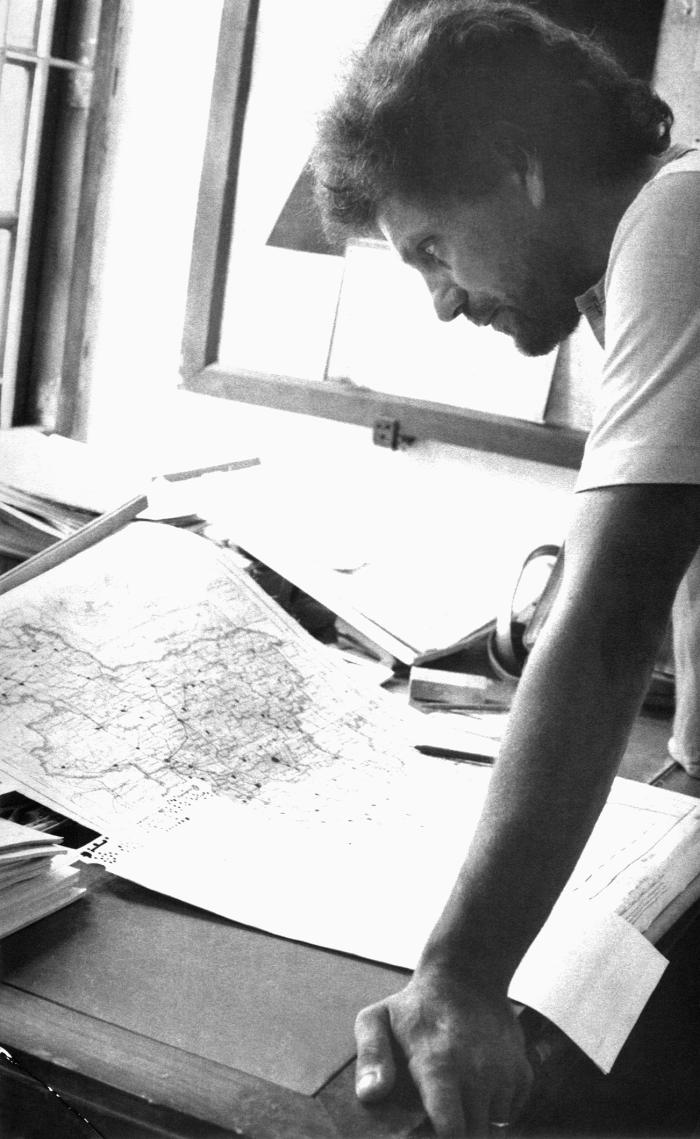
This 1975 image depicted Dr. Daniel Tarantola, a World Health Organization epidemiologist, as he was analyzing Bangladesh district maps, which revealed the locations of smallpox cases that had been detected in the region. Dr. Tarantola proved to be an excellent strategist, and 'field general', and was E.I.S. epidemiologist Dr. Stan Foster's replacement as a team leader.